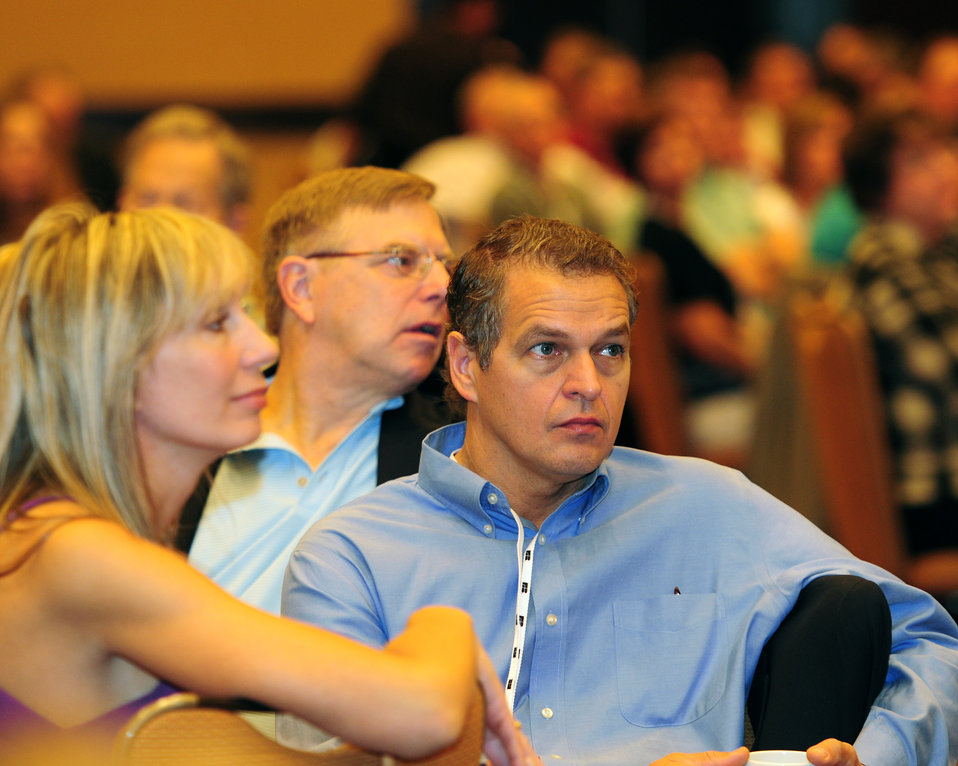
Audience members look on as Agriculture Secretary Tom Vilsack speaks at the Iowa Farm Bureau Breakfast at the Sheridan Waikiki, Hawaii, on Sunday, January 8, 2012.